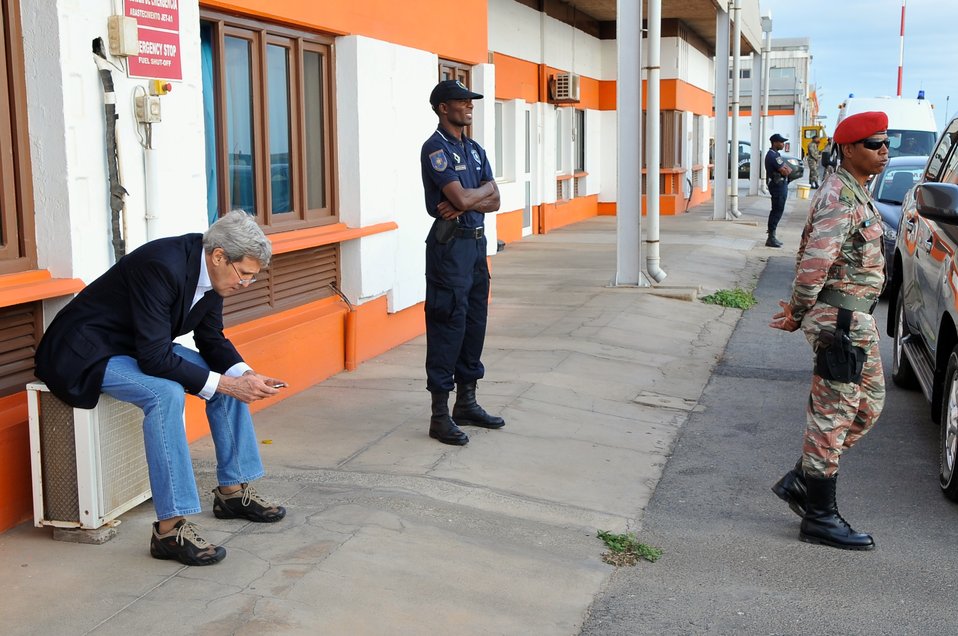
Secretary Kerry Makes Phone Call During Refueling Stop in Cape Verde

U.S. Secretary of State John Kerry makes a phone call while his plane is refueled on Sal Island, Cape Verde, during a flight from Luanda, Angola, to Andrews Air Force Base, Maryland, on May 5, 2014.